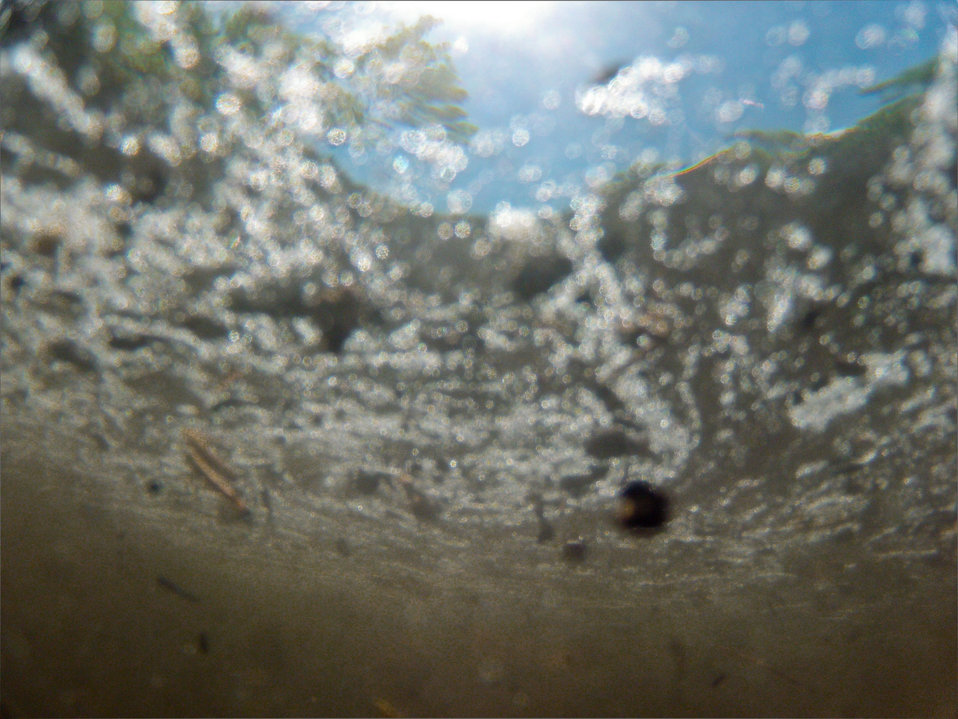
Underwater view of what would normally be clear mountain waters at a confluence of two tributaries, the Cache la Poudre and the North Fork of the Cache la Poudre, near Seaman Reservoir, 60 miles north of Denver, Colorado on Friday, July 20, 2012. Because of the Hewlett Gulch Fire (May 14, 2012), in the Poudre Canyon area clear water has been transformed to nearly black water, heavily laden with ash, silt, and burnt debris washed down mountainsides by thunderstorms. At its peak more than 400 firefighters were battling fires pushed by 50 mph winds. When the last embers were cooled, more than 12-square miles lay blacked at a cost of approximately 3.2 million dollars. The aerial distribution of straw has successfully kept nearby Seaman Reservoir clean for the drinking water of the City of Greeley. Forest Service lands receive straw, while private and other lands receive a seed mix and straw to promote ground cover plant growth on ash-covered lands. In total, 1,800 tons of straw will be applied during the 14-day operation. One quarter of the cost was paid by the City of Greeley and the U.S. Department of Agriculture funded the remainder.